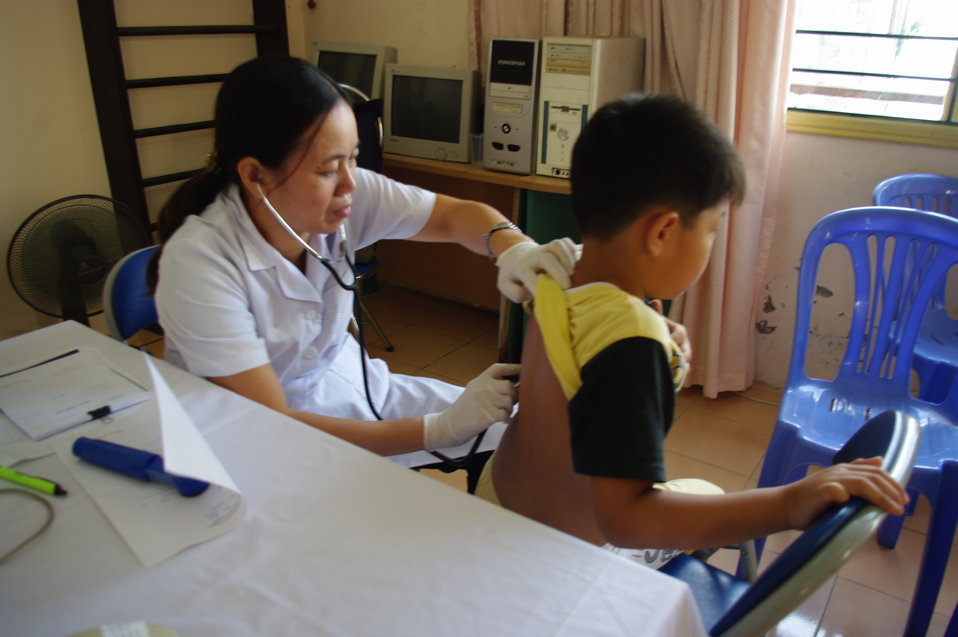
Oprhans and vulnerable children receive free medical check-ups in Hanoi